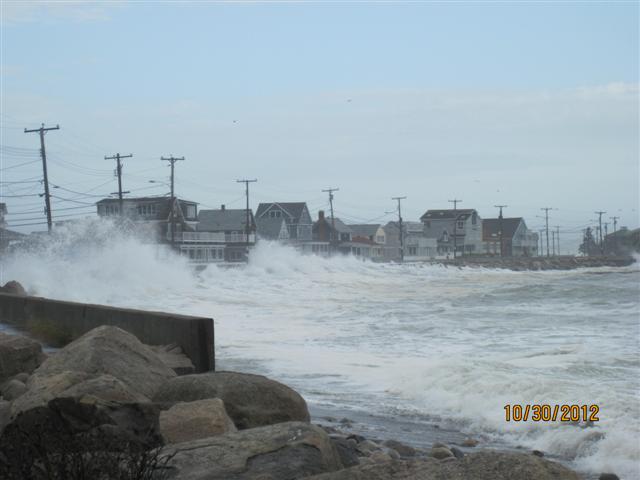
Hurricane Sandy hit Rachel Carson National Wildlife Refuge (ME)

Overwash at the sea wall at Wells Beach.